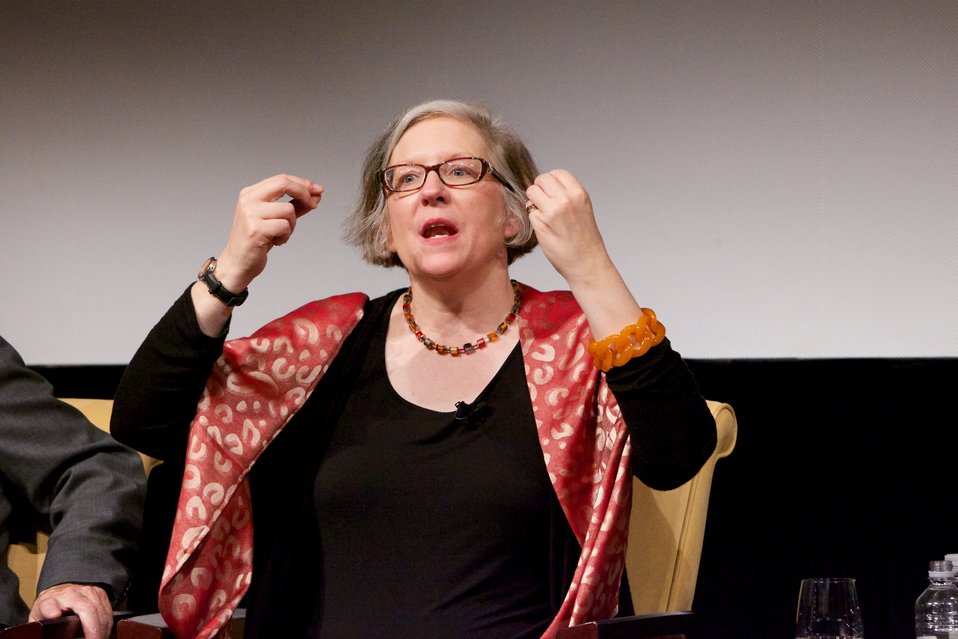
Jazz Diplomacy: Sending America's Music to the World